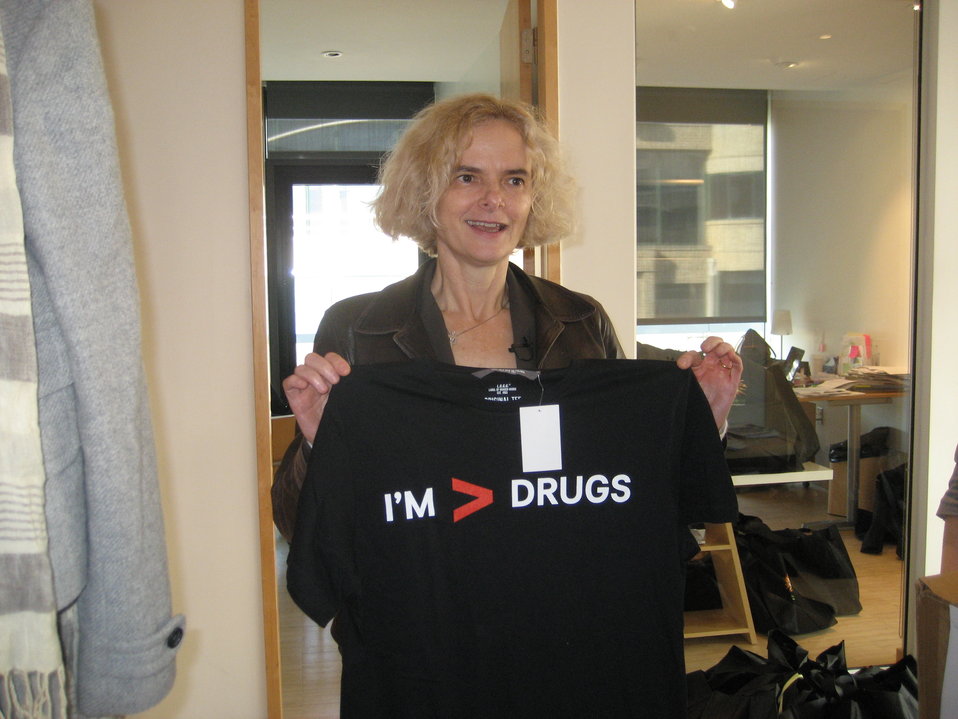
Mentor 25